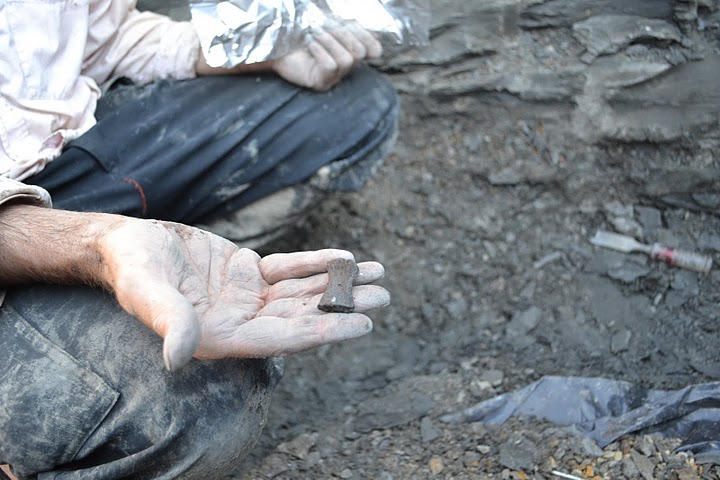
Druckenmiller Displays a Bone

Patrick Druckenmiller holds a perfect piece of bone removed from the Bearpaw Shale. In order to protect loose bones for transport, each was wrapped tightly in a piece of aluminum foil.